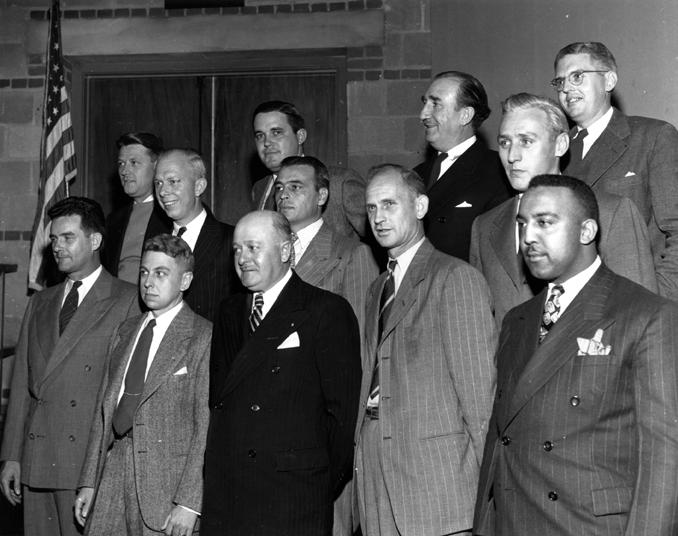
Meeting at Oak Ridge